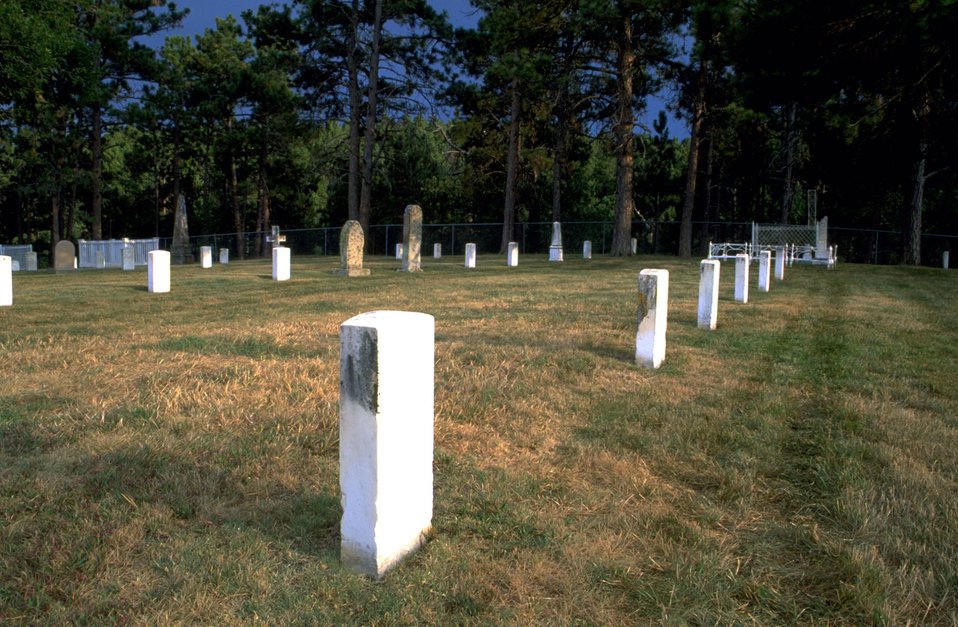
Old Post Cemetery